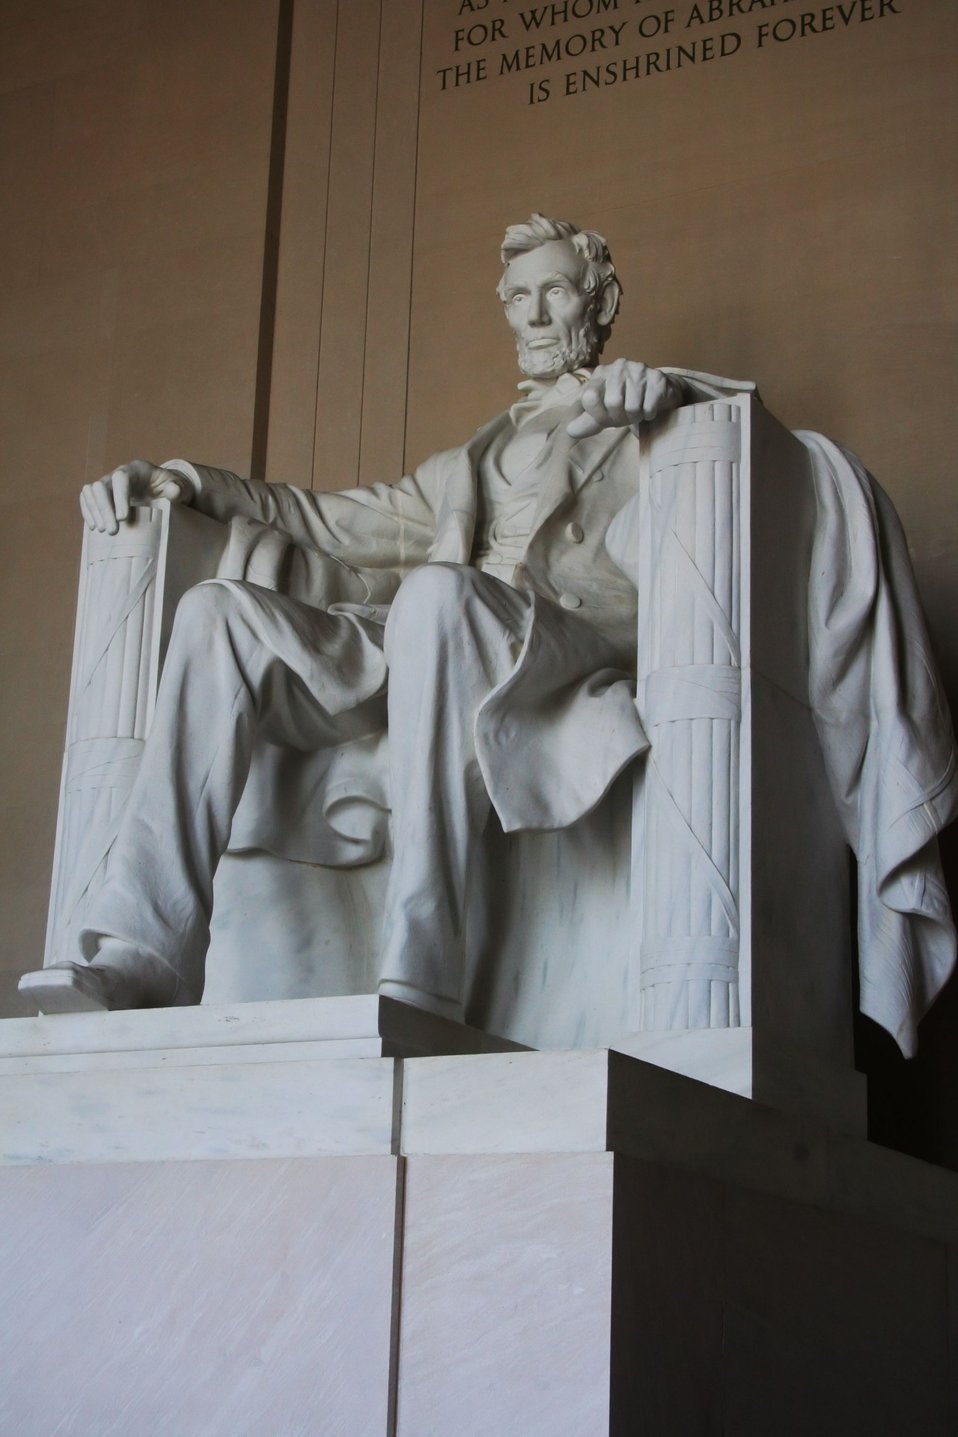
Lincoln memorial

The lincoln memorial is an american national monument built to honor the 16th president of the united states..